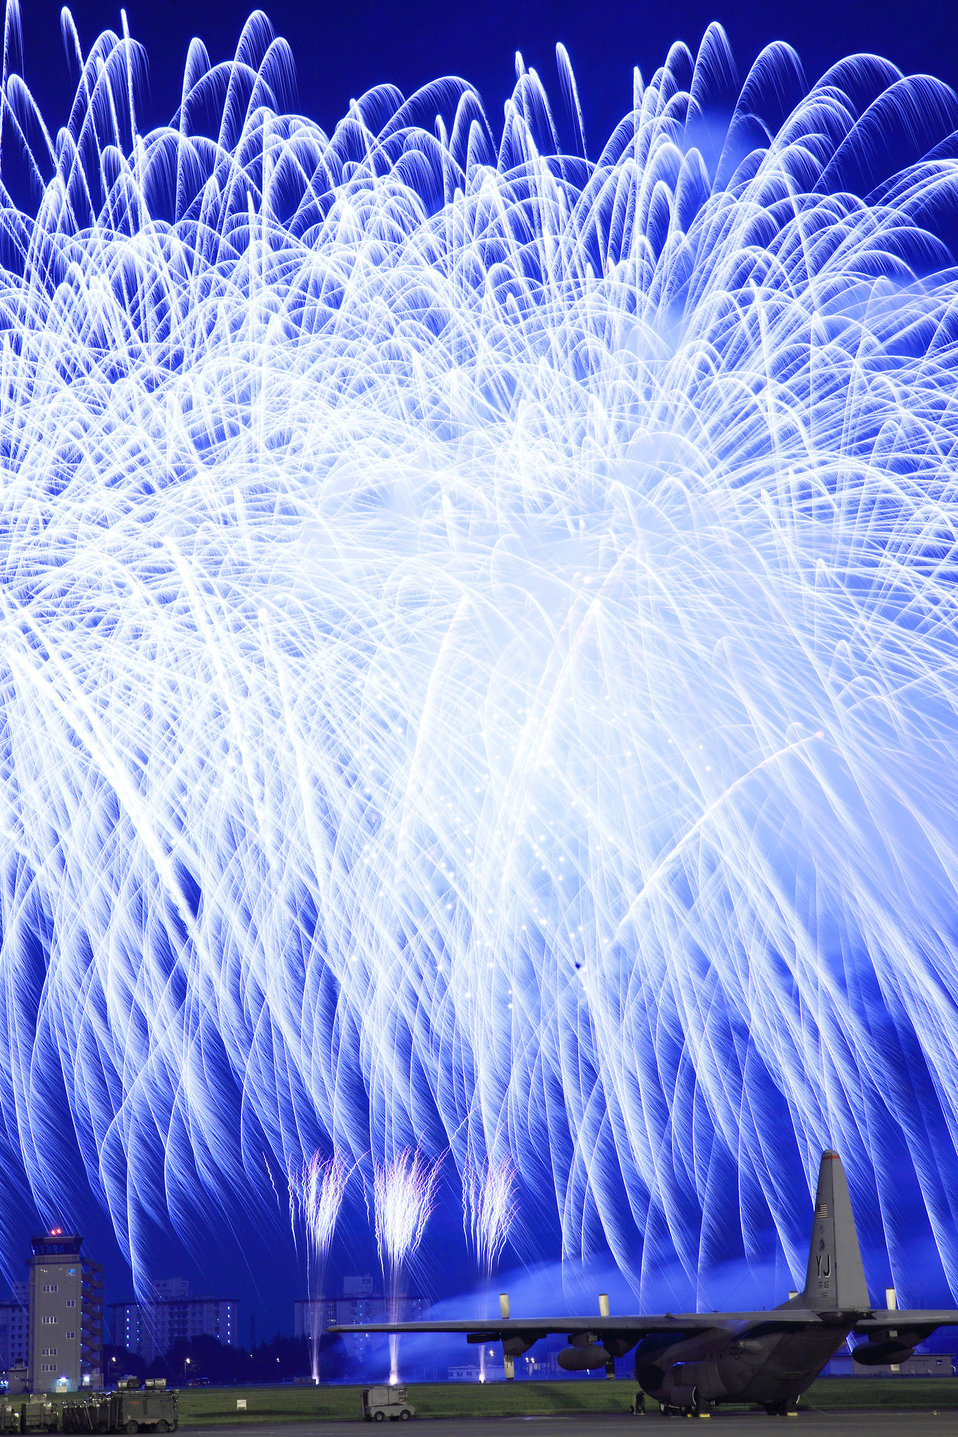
Blaze of friendship

A fireworks display capped off the 2009 Yokota Air Base Japanese-American Friendship Festival Aug 22-23, 2009. More than 170,000 people attended the event designed to bolster the bi-lateral relationship shared by the United States and Japan. In addition to static displays and live music, the festival offered a variety of American and Japanese food.